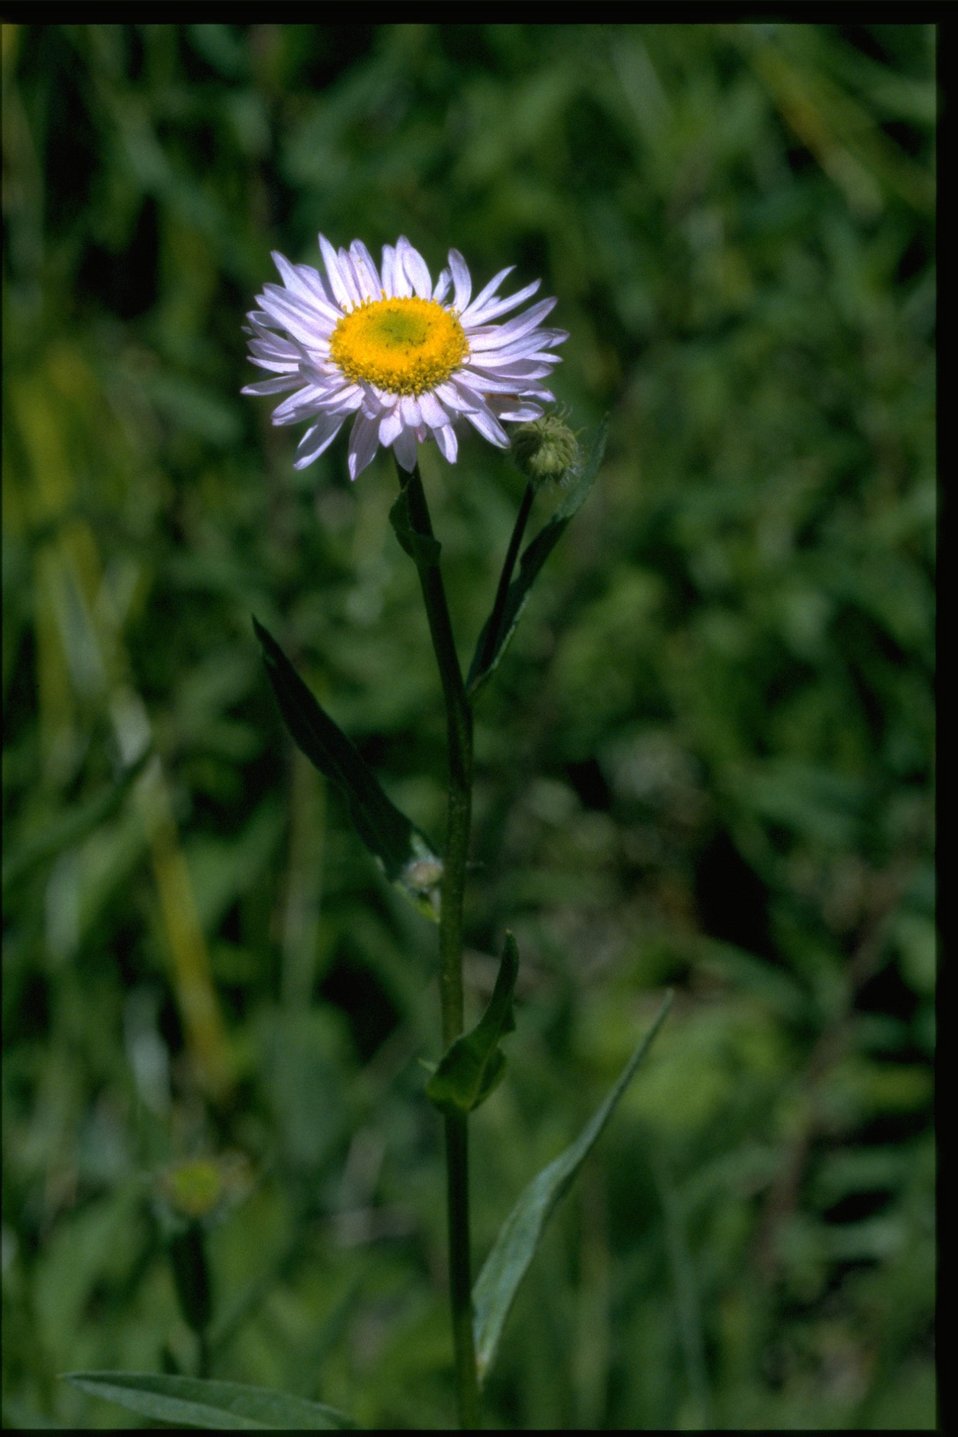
Medium shot of wildflower (Asteraceae).